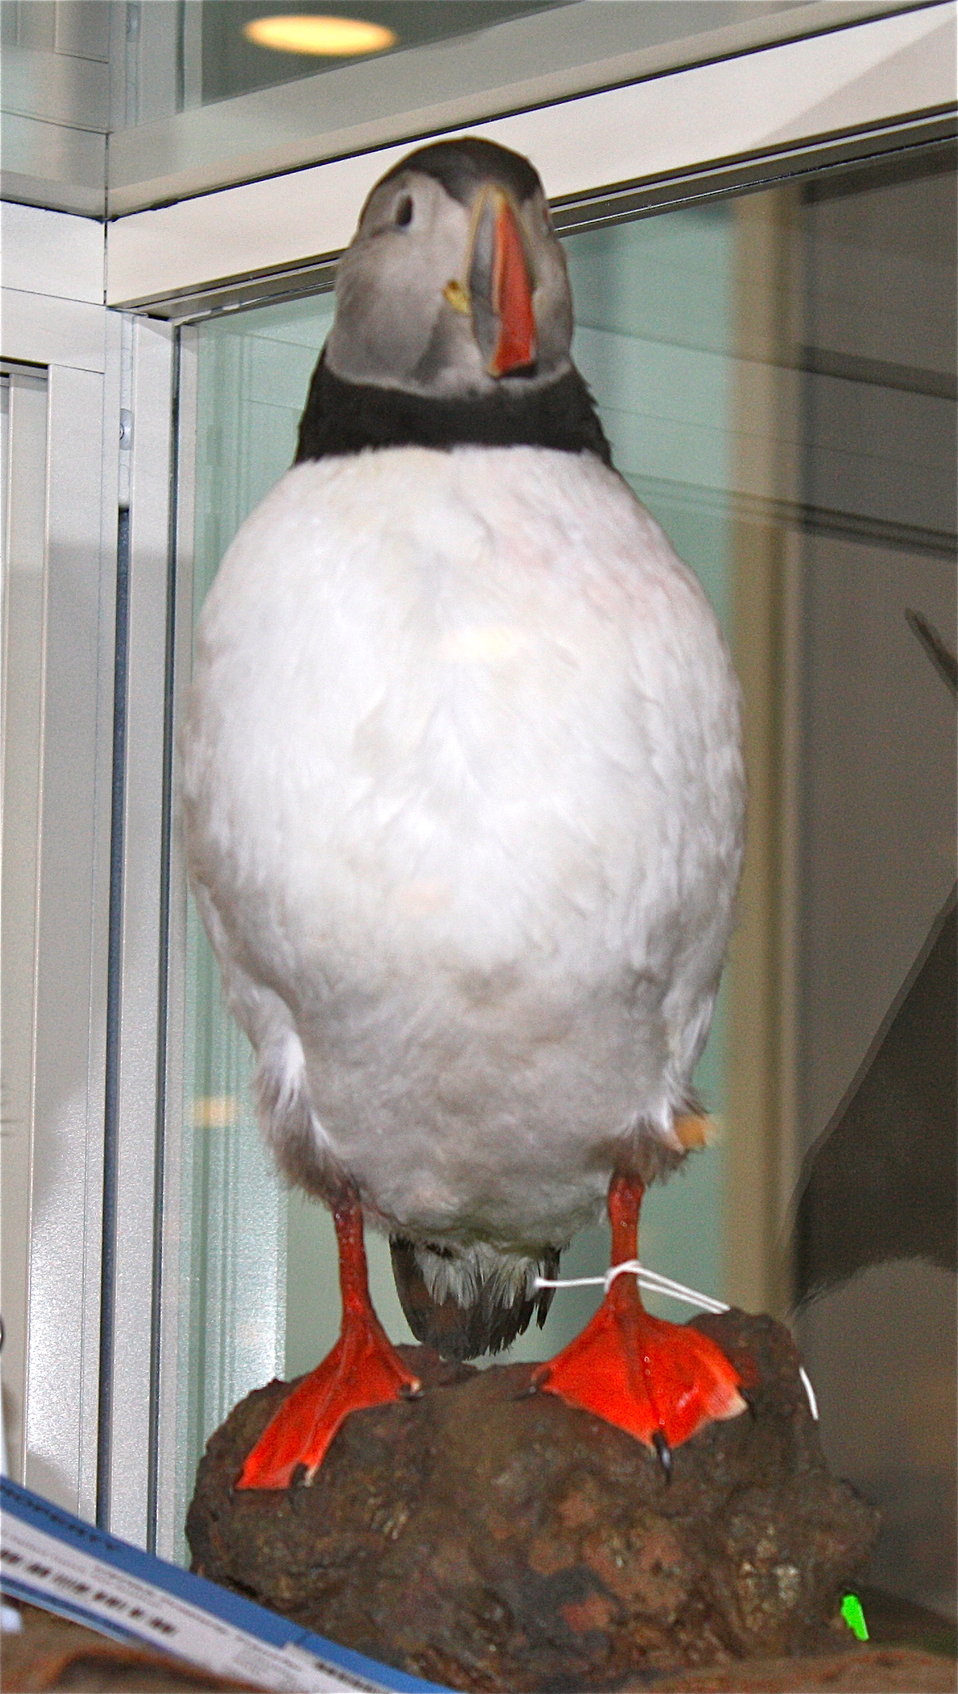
Mounted Puffin